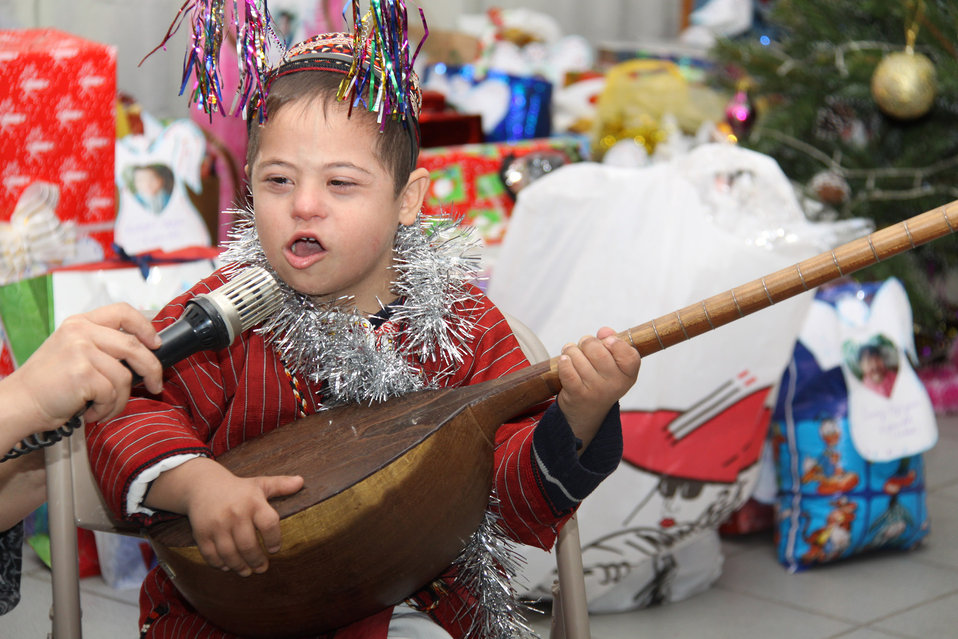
A Turkmen boy plays an instrument at a holiday party. U.S. exchange alumni, together with the U.S. Embassy community and local NGOs, brought the holiday spirit to over 90 orphans, disabled children, and disadvantaged youth at the U.S. Embassy Ashgabat in Turkmenistan in December 2010.